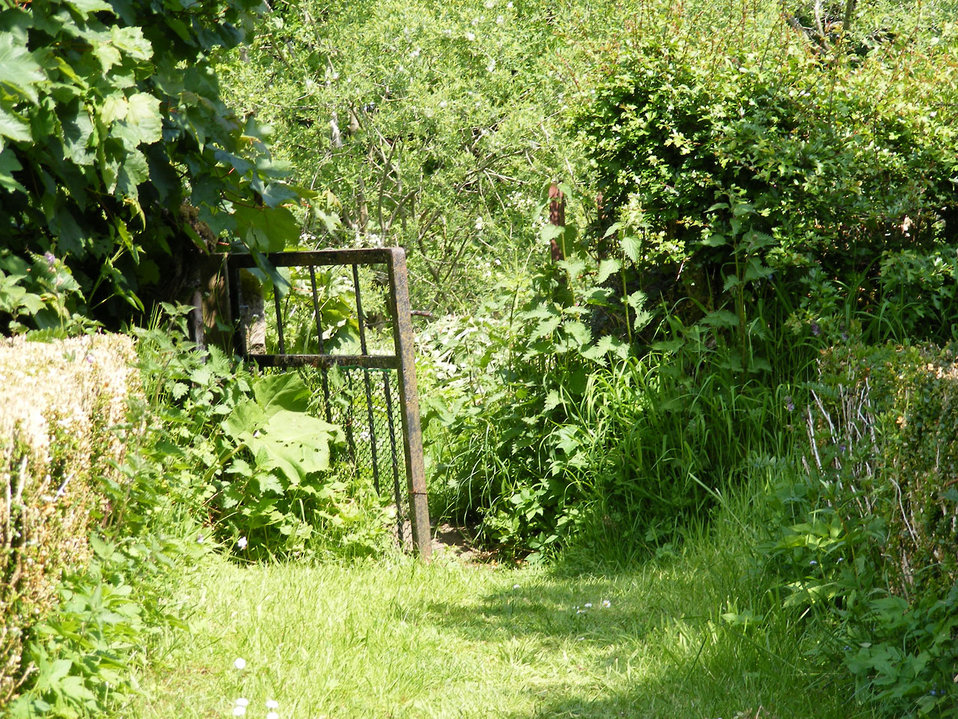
Entropy

A disused gate leads to natures reclamation.